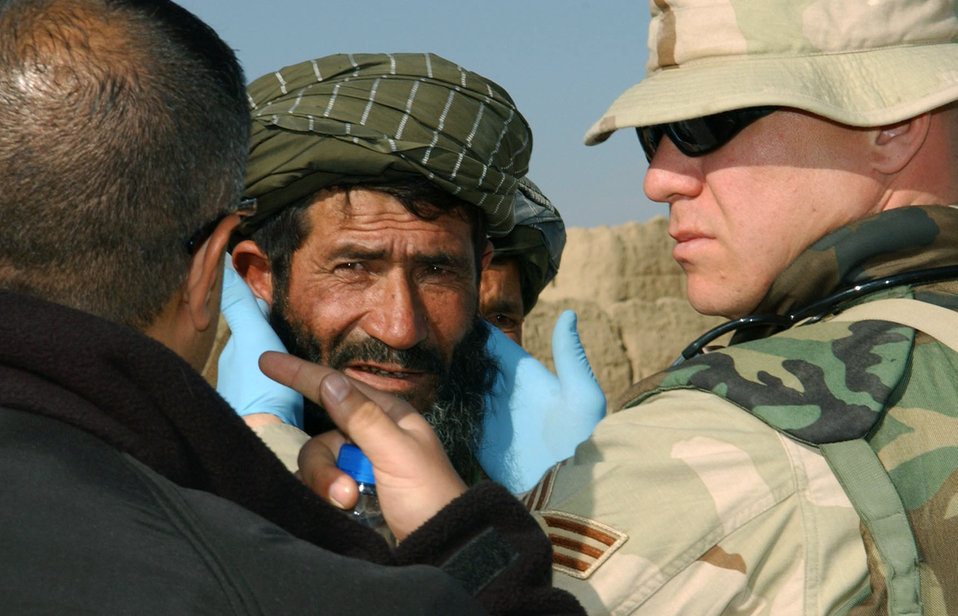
Airmen revive adopt-a-village program

KHAROTI, Afghanistan -- Senior Airman Jason Weiss lightly rubs behind a villager's ears to see if the man experiences discomfort, which is one of the common symptoms of a sinus infection. Through an interpreter, the Afghan shared complaints of facial pain, a stuffy nose and sore throat with Airman Weiss who treated him with medication. In about three hours, the medical technician evaluated and provided minimal treatment for about 60 patients. He is deployed to nearby Bagram Air Base from Spangdahlem Air Base, Germany supporting Operation Enduring Freedom.